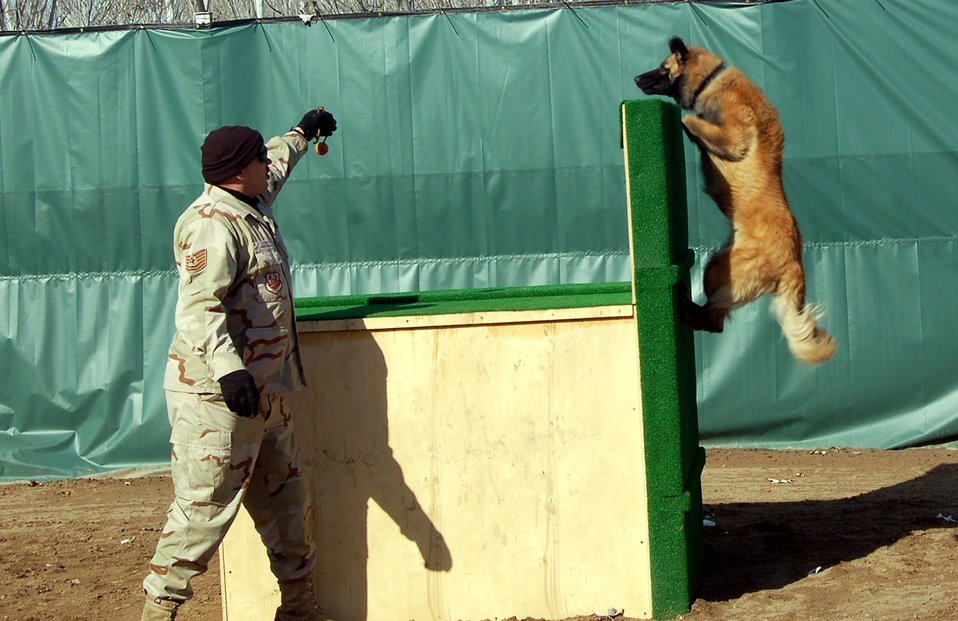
Kyrgyz K-9 corps takes shape

Tech. Sgt. Mark Lotre holds up a ball as part of a game to train K-9 Valya to jump over a barrier Feb. 20 at Manas Air Base, Kyrgyzstan. The 376th Expeditionary Security Forces Squadron here works with the Kyrgyz republic K-9 program to help train dogs and their handlers. Sergeant Lotre is deployed from the 9th Security Forces Squadron at Beale Air Force Base, Calif.